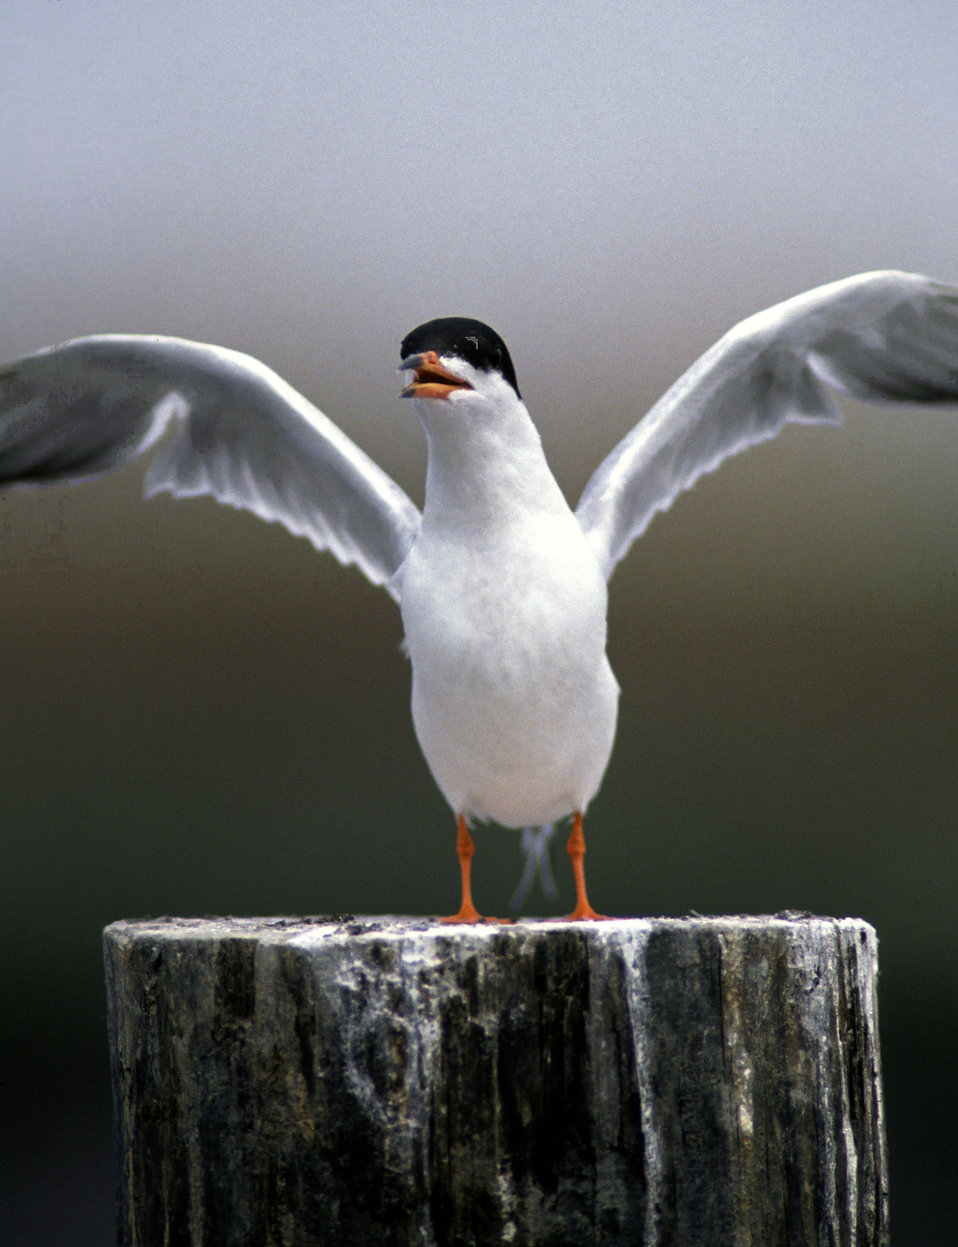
Common Tern

Jake's Landing, NJ.